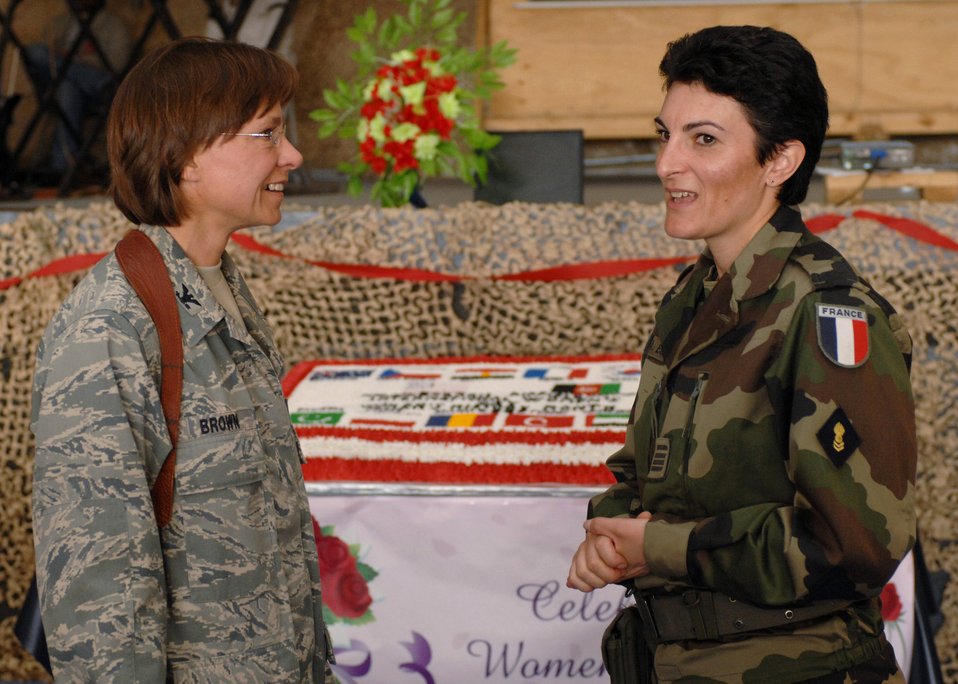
Bagram hosts International Women's Day

Col. Rebecca Brown and French Maj. Angelique Esperance discuss the day's events at the International Women's Day held March 3 at Bagram Air Base, Afghanistan. Hundreds turned out to the festivities to celebrate the world's women and acknowledge women's contributions to peace and security. Colonel Brown is the 455th Expeditionary Medical Operations Squadron commander, and Major Esperance is a contracting and legal officer for the French forces.